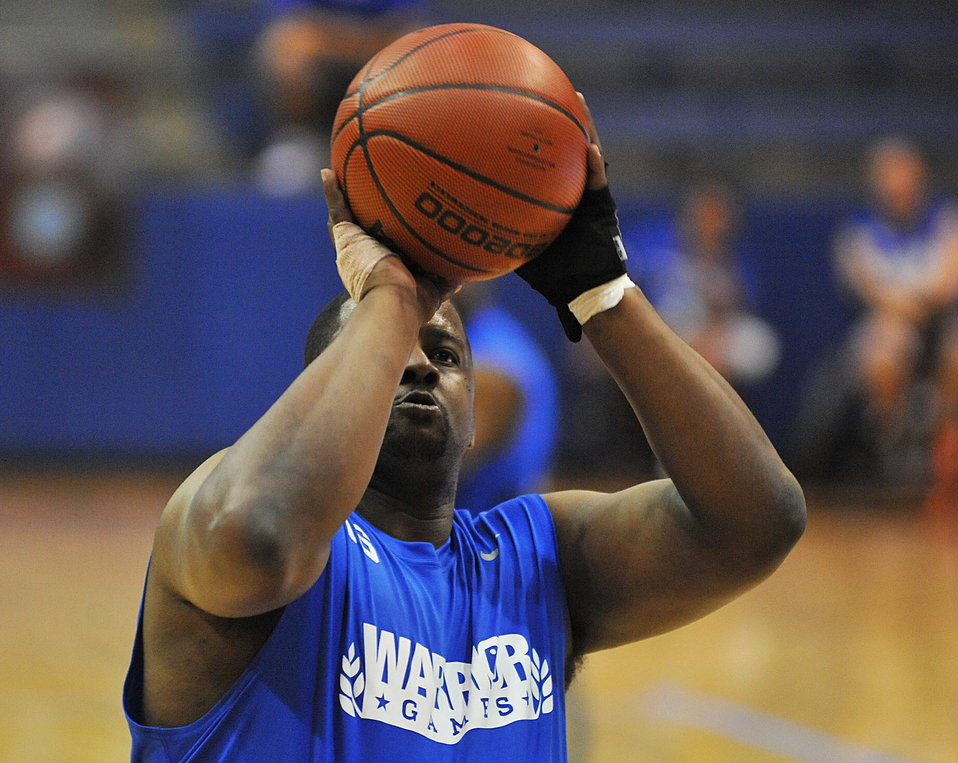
Warrior Games

Air Force team member Kevin Murphy shoots a free throw during a basketball game against the Marine Corps team May 4, 2012, during the Warrior Games at the U.S. Air Force Academy in Colorado Springs, Colo. The Air Force, which lost to the Marines by a score of 37-21, won the bronze medal.